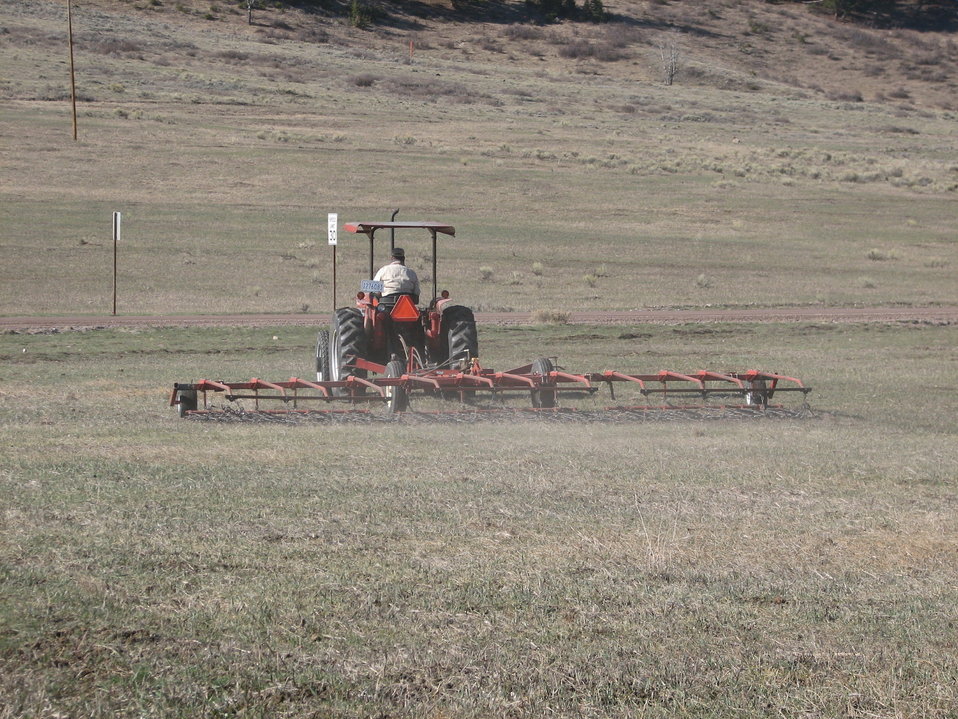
Spring Harrowing

In the spring, refuge seasonal irrigators begin the growing season by harrowing. The process breaks up clumps of dead grass and accumulations of manure from large numbers of wintering elk and bison. It also allows the soil to aerate and encourages new growth.